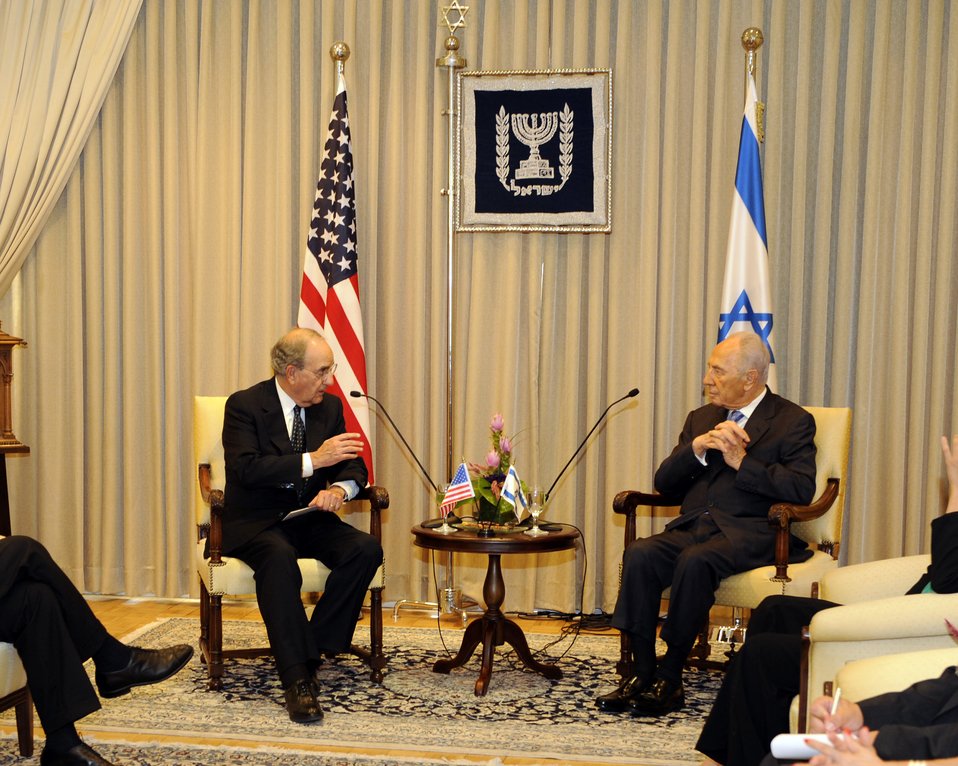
U.S. Special Envoy George Mitchell Meets With Israeli Defense Minister

U.S. Special Envoy George Mitchell with Israeli Minister of Defense Ehud Barak during their meeting in Tel Aviv, Israel July 26, 2009.